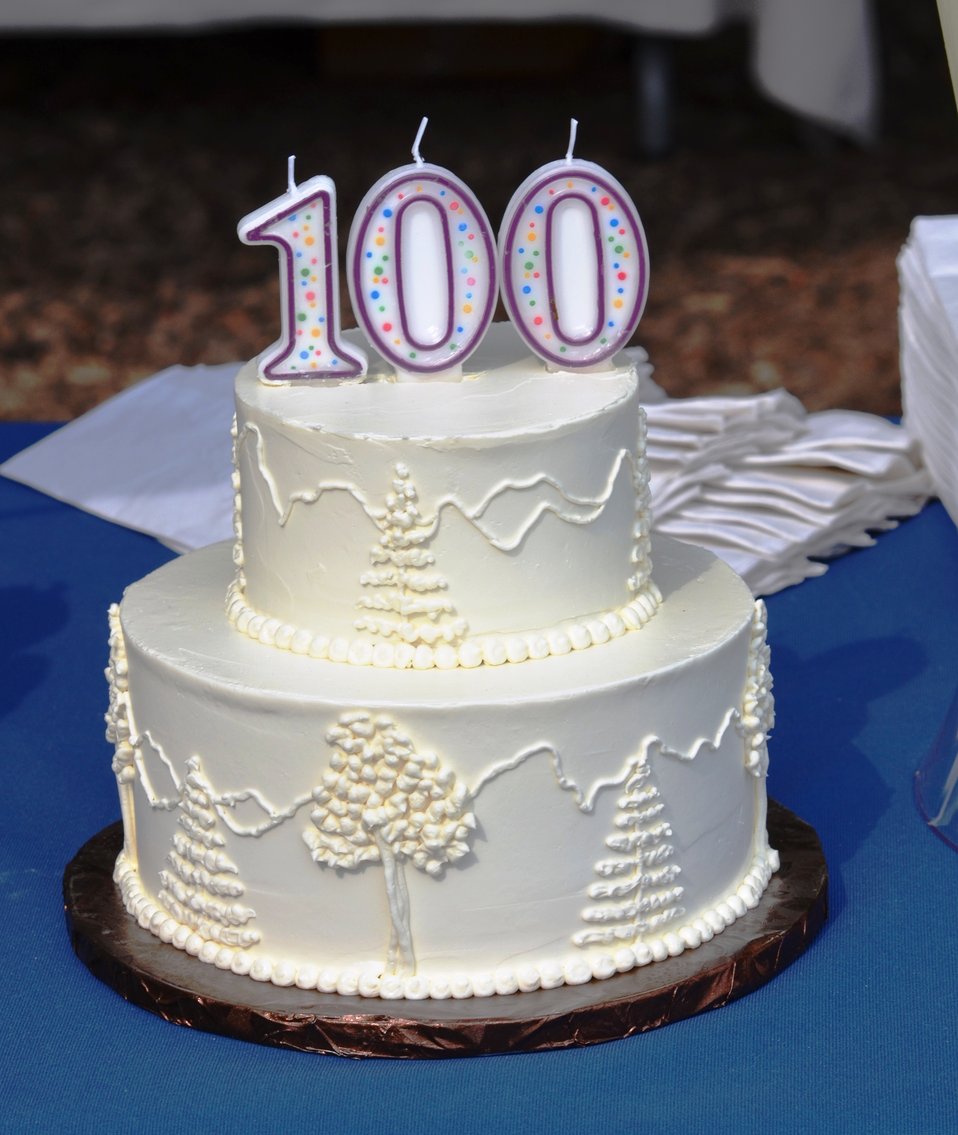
Every Birthday Party Has to Have Cake!

The Jackson Cake Company prepared a beautiful cake that was carried in at the end of the National Elk Refuge's August 10 centennial ceremony. The cake included the outline of the Teton Range.

Credit: USFWS / Bobby Harkey, National Elk Refuge volunteer